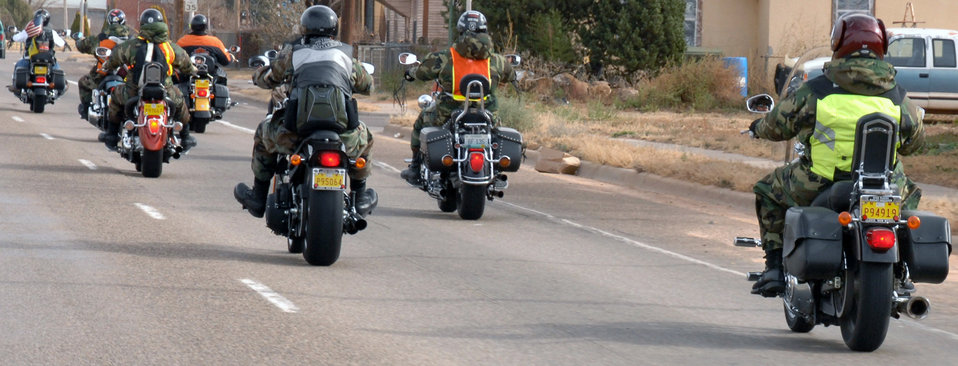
Bikers roll out meals on wheels

Motorcycle riders head to the Clovis Food Bank Dec. 6 from Cannon Air Force Base, N.M. The base riders group donated food to the food bank to share in the holiday spirit.